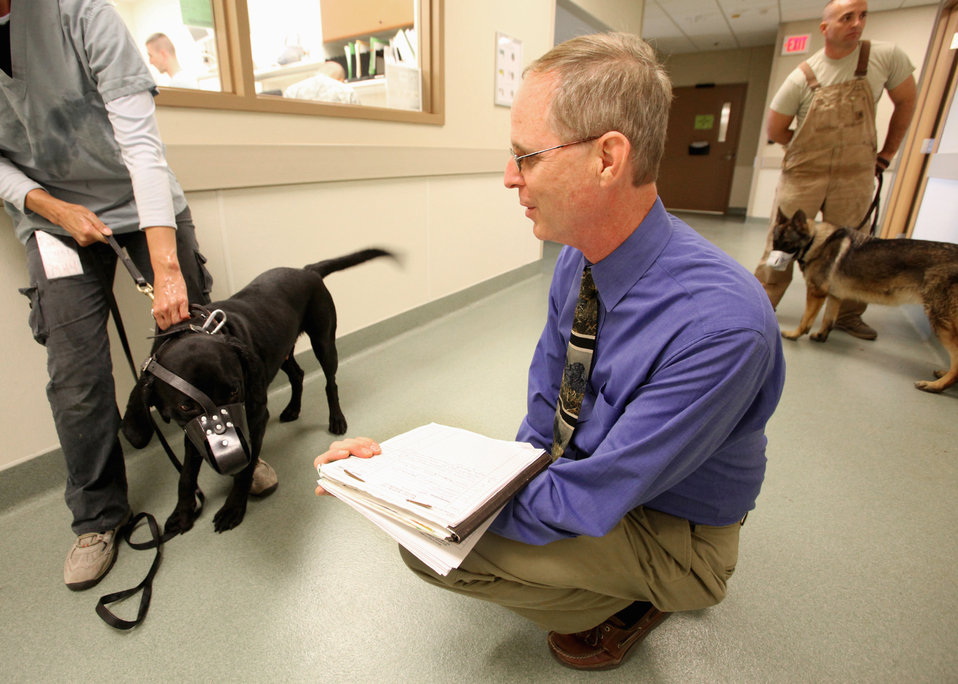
MWD behavior

Dr. Walter Burghardt evaluates the behavior of a military working dog Sept. 11, 2010, at Lackland Air Force Base, Texas. Dr. Burghardt is the chief of Behavioral Medicine and Military Working Dog Studies at Lackland's Daniel E. Holland MWD Hospital.